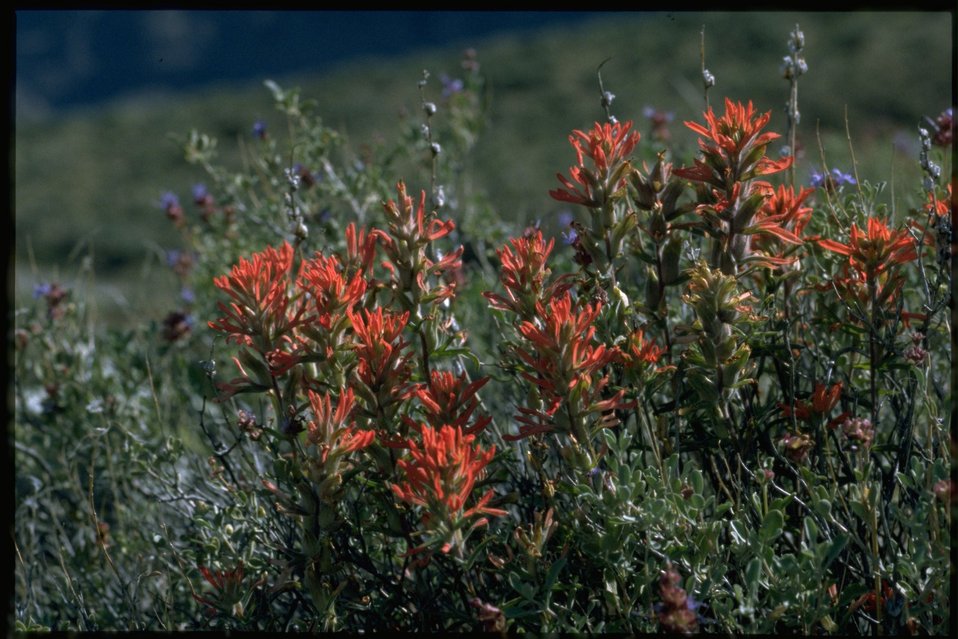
Medium shot of Castilleja.